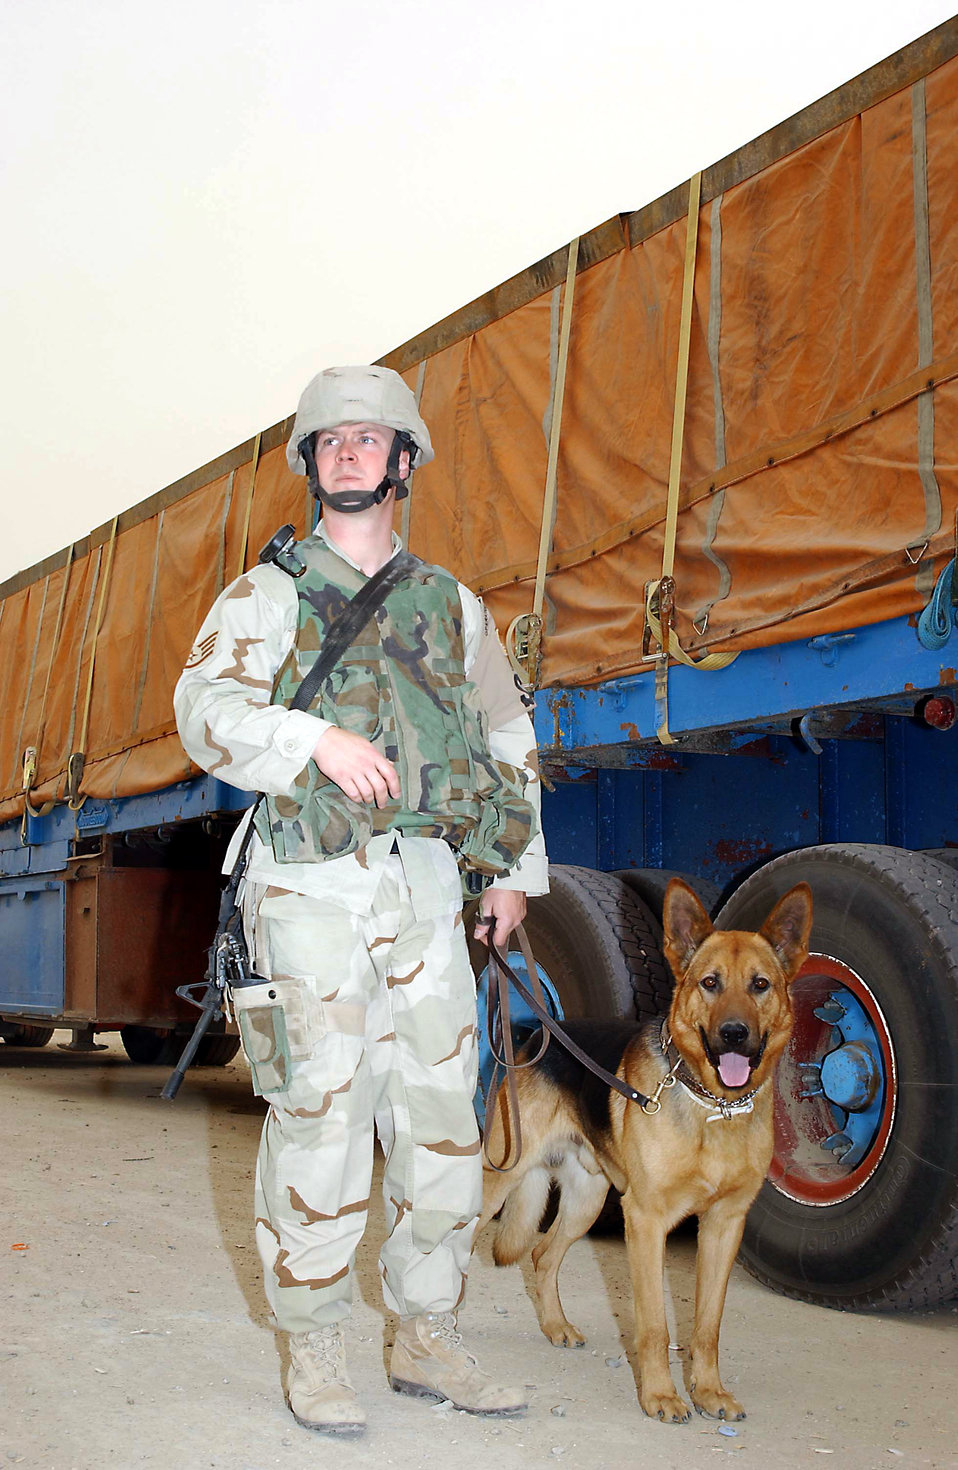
Military working dogs: More than man's best friend

SOUTHERN IRAQ -- Staff Sgt. Gregory Long and his military working dog, Doran, walk down an endless row of civilian semitrailer trucks searching for explosives and contraband at a remote location. They are assigned to the 407th Expeditionary Security Forces Squadron at Ali Base.